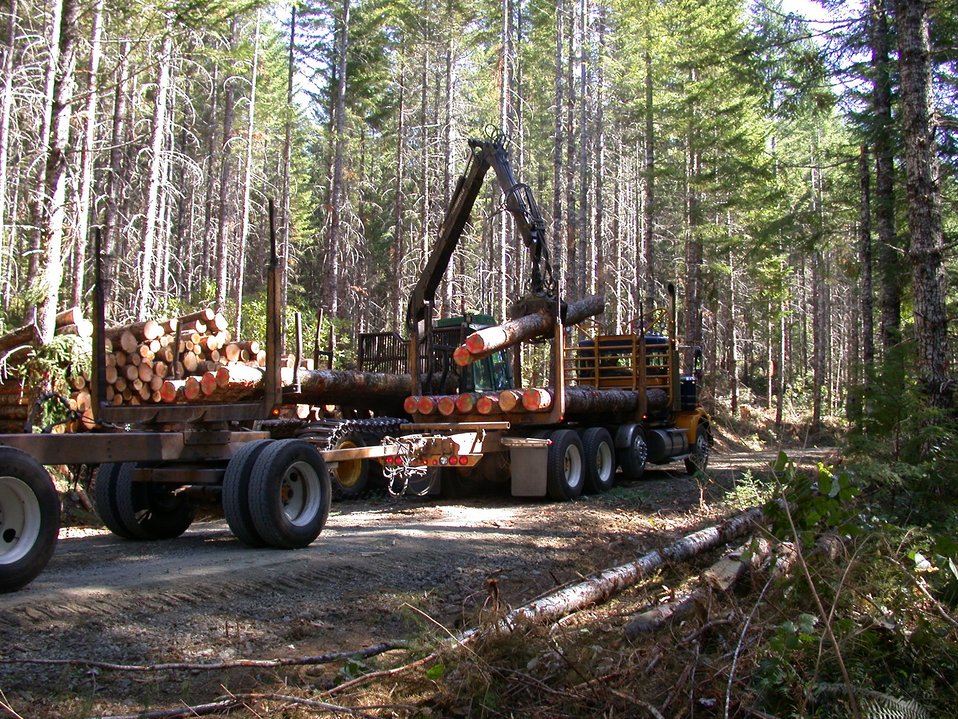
Camas East Timber Sale in Late Successional Reserve.